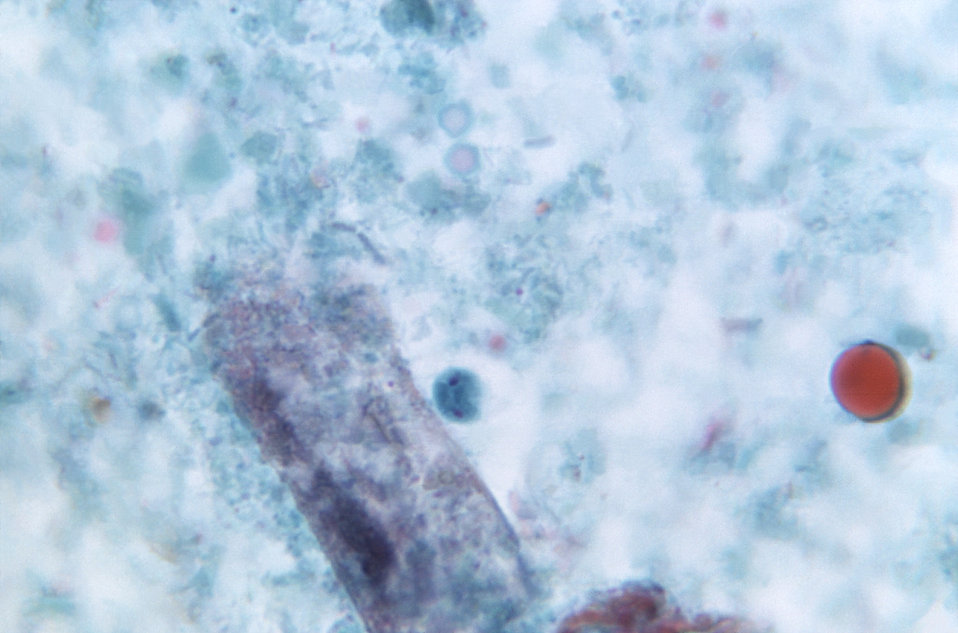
Under a magnification of 1000X, this trichrome-stained photomicrograph revealed the presence of a binucleated, flagellated Enteromonas hominis protozoa, which has been classified as a nonpathogenic microorganism.